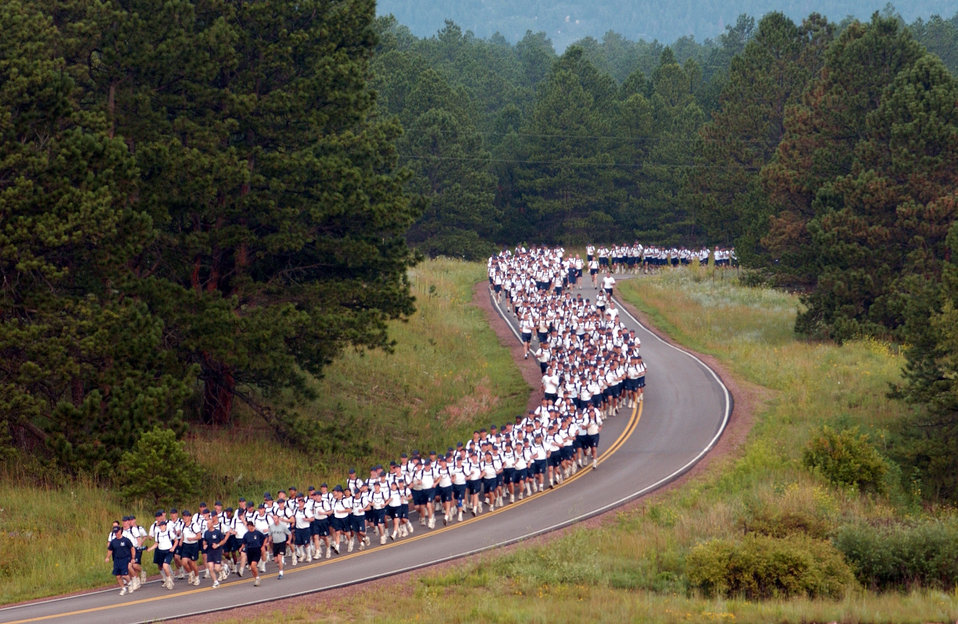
Only 36 miles to go

U.S. AIR FORCE ACADEMY, Colo. -- More than 1,200 people from the Air Force Academy's Class of 2008 begin their 36-mile relay